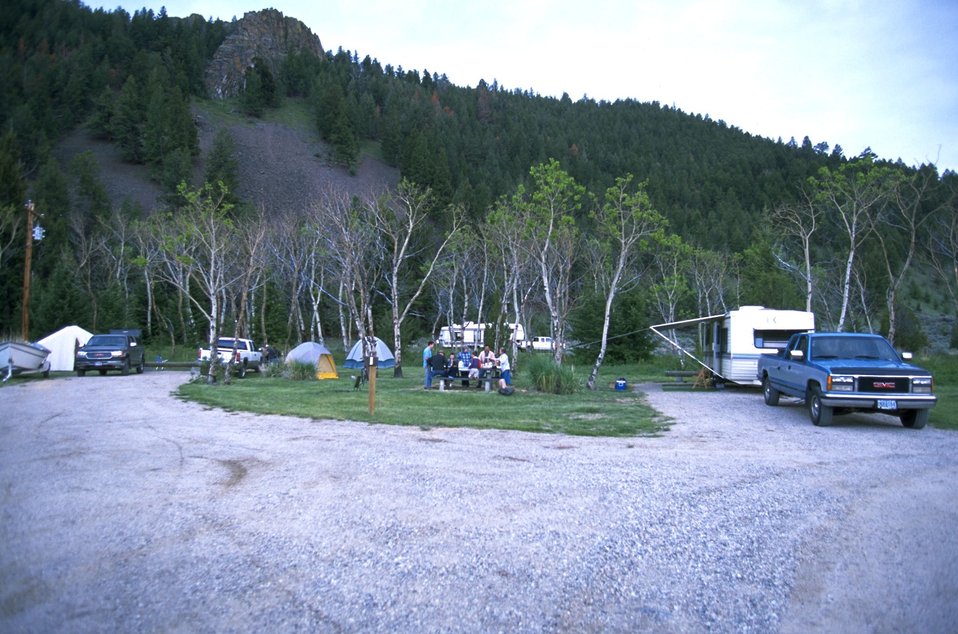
Campers at Divide Campground